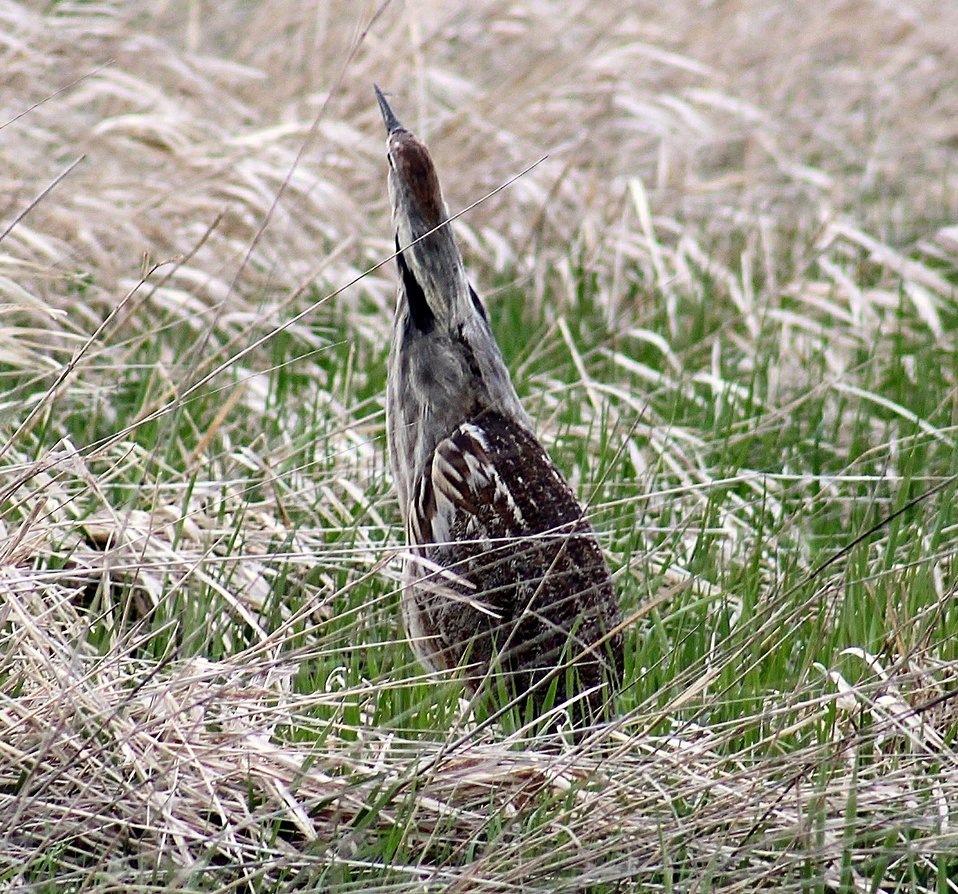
American Bittern at the Missisquoi National Wildlife Refuge